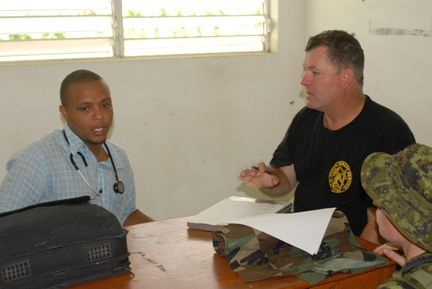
This image captured in the municipality of Ennery, Haiti, September 22, 2008, depicts U.S. Public Service (USPHS) Lt. Cmdr. Gary Brunette, and Canadian Army Capt. Gillian Batt (lower right foreground), participating in discussions with Haitian health officials inside a local medical clinic. Lt. Cmdr. Brunette and Capt. Batt had both embarked on this humanitarian effort aboard the USS Kearsarge (LHD 3).